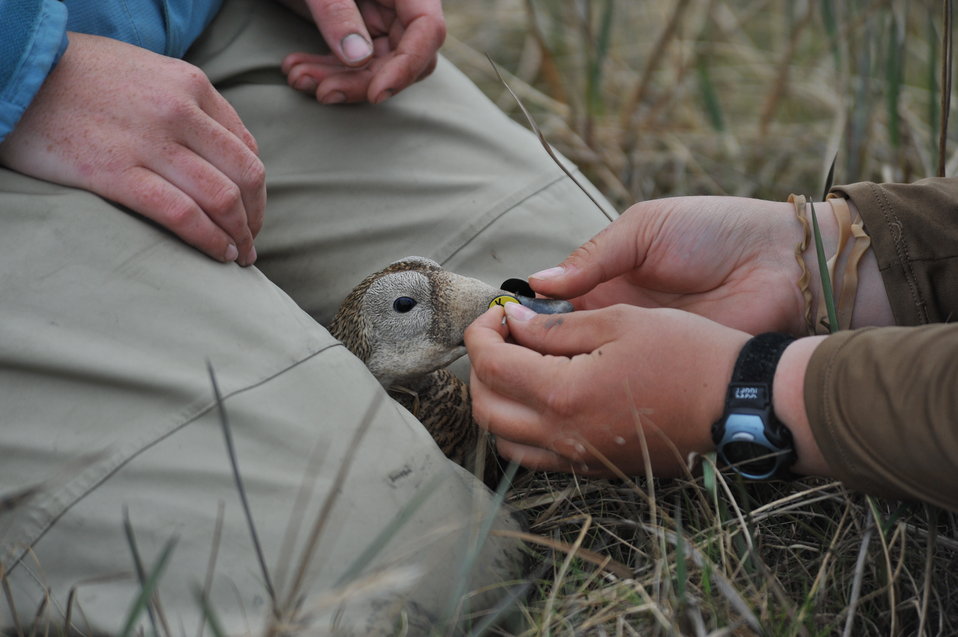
New Nasal Disc

Applying nasal disc.

USFWS Yukon Delta NWR